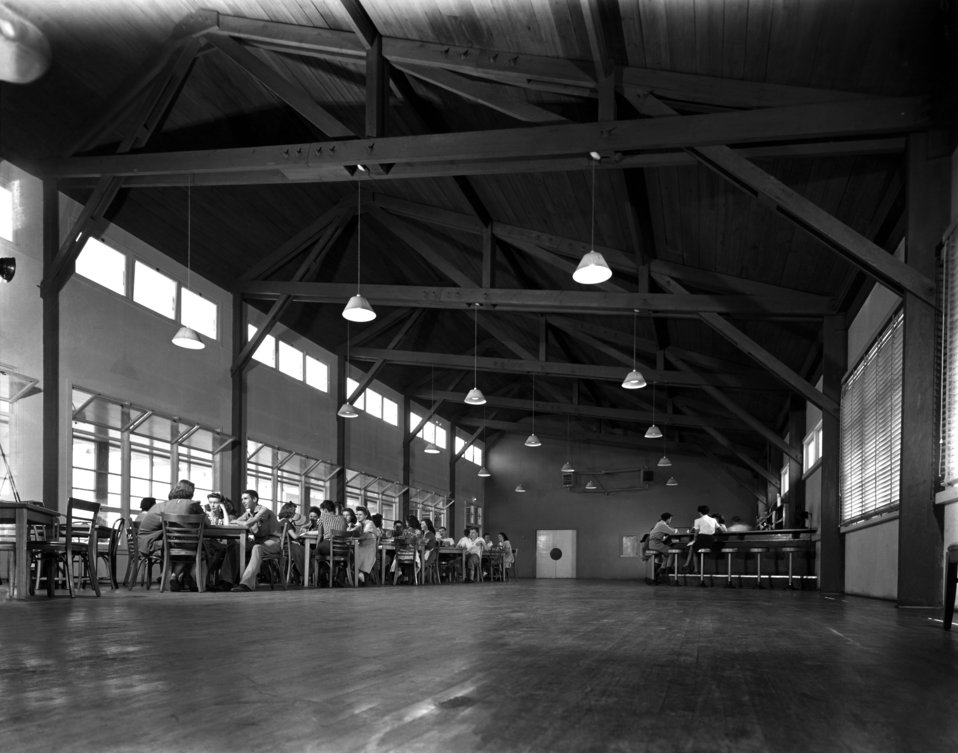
Recreation Hall Oak Ridge 1944

MED133 DOE photo Ed Westcott 1944 Oak Ridge Tennessee